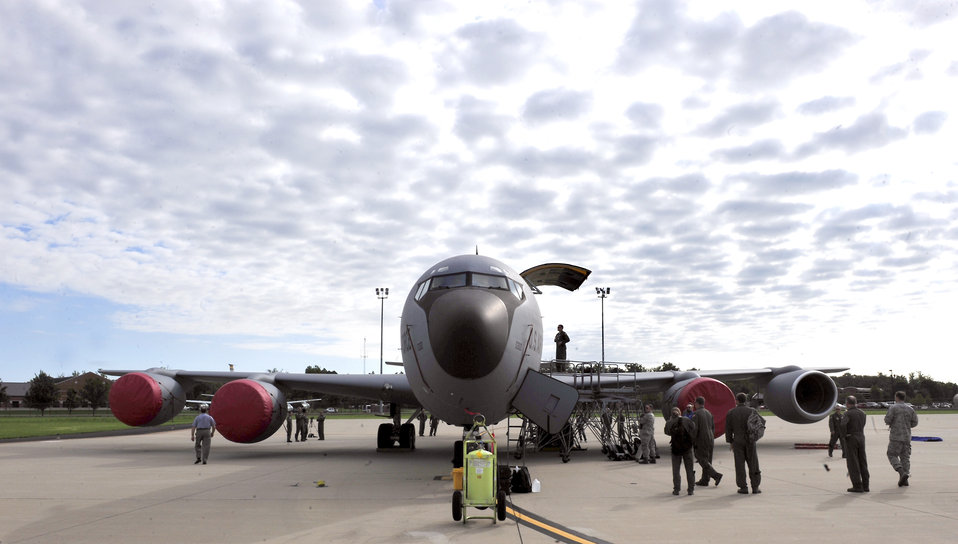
Egress exercise

Flight crew members and test evaluators prepare a KC-135 Stratotanker for a ground egress scenario June 28, 2011, at Scott Air Force Base, Ill. The Air Mobility Command-directed test was used to determine the number of passengers one passenger monitor can safely egress, or evacuate, from an aircraft in 90 seconds.